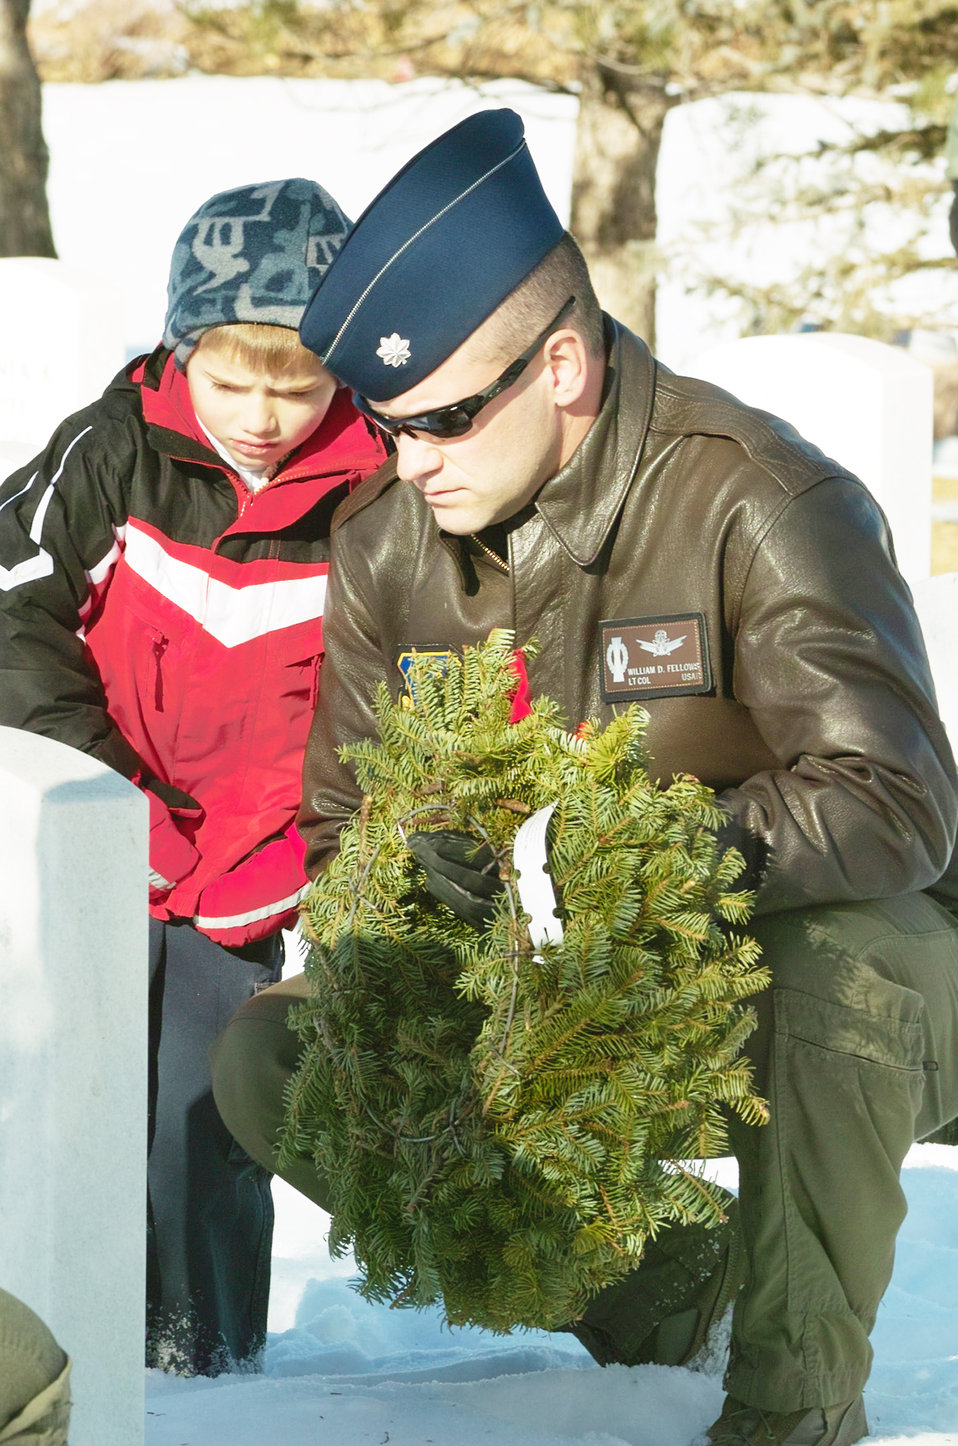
Volunteers honor veterans with wreaths

Lt. Col. William Fellows and his son lay a wreath during Wreaths Across America Dec. 14, 2009, at Fort Logan National Cemetery in Littleton, Colo. The Civil Air Patrol run the Wreaths Across America program, and CAP members and volunteers lay wreaths on graves in veterans' cemeteries nationwide. Colonel Fellows is from Schriever Air Force Base, Colo.